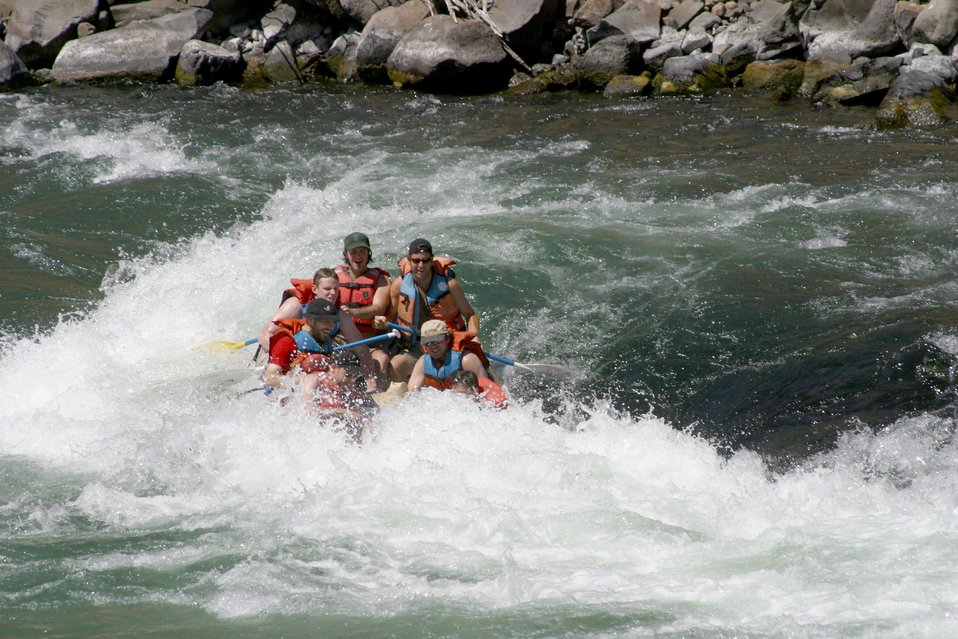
Boxcar Rapids class III, has large waves with a small drop that form turbulent currents. 7/26/03 Pelton Dam 3600 cfs: Moody Rapids 4300 cfs.